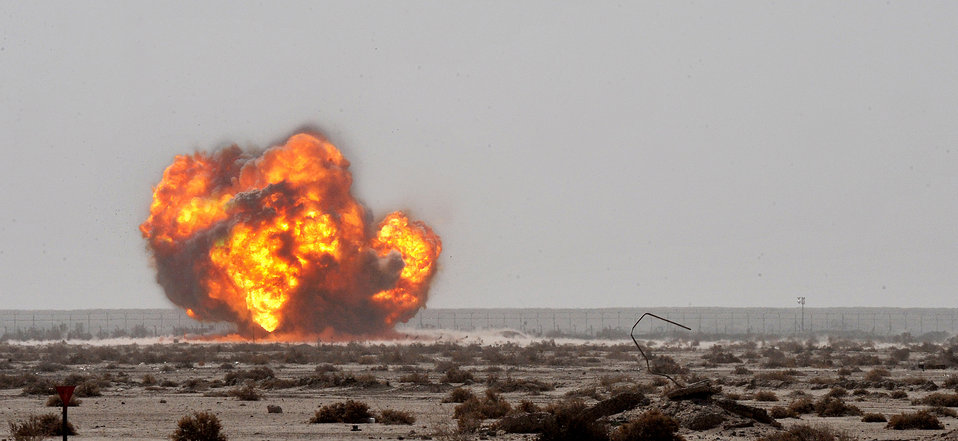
EOD Airmen

Members of the 407th Expeditionary Operations Support Squadron explosive ordnance disposal team along with members of Army EOD team successfully detonate a pile of 40-millimeter rounds and C-4 March 3, 2011, at Ali Air Base, Iraq.